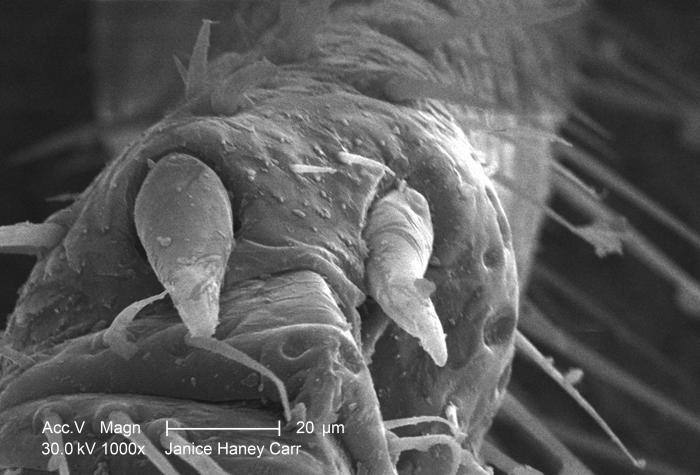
Under a moderately-high magnification of 1000X, this scanning electron micrograph (SEM) revealed some of the ultrastructural morphology found at the distal end of one of the six jointed legs of a termite, which had been discovered in the suburbs of Atlanta, Georgia.